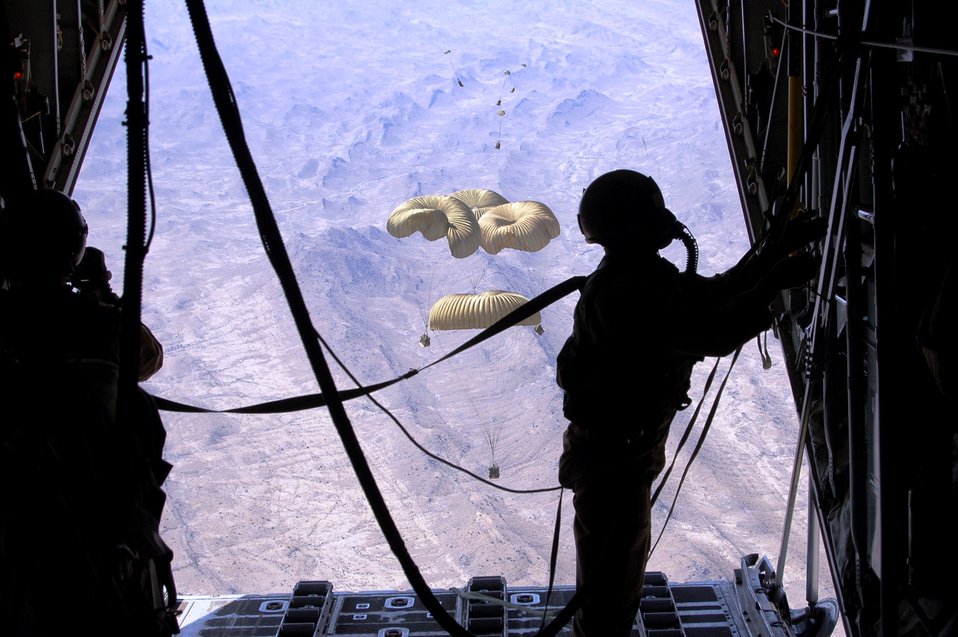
C-130 airdrops provide critical supplies to U.S. forces

A C-130 Hercules loadmaster observes Improved Container Delivery System bundles March 27 that were airdropped over Afghanistan to replenish supplies for U.S. ground forces supporting Operation Enduring Freedom.